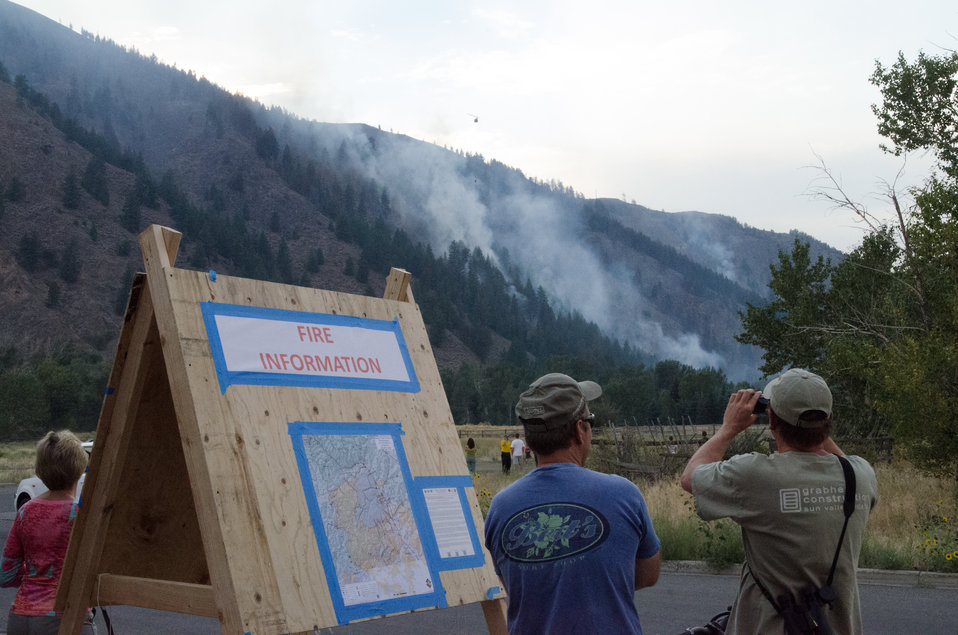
A Bell UH-1H helicopter pilot is seen from a nearby supermarket parking lot entrance and Fire Information board, as water a full load of water is released from the helibucket, below it, the collapsible bucket utilizes a pilot-controlled release valve, that is able to deliver a concentrated column of water from the helicopter to the fire on the Carbonate Ridge, rising behind the Wood River, during Beaver Creek Fire, west of Hailey, ID, on Monday, Aug 19, 2013. These operations can be performed in close proximity to the interface between wildlands and populated area, they help prevent losses due to the these types of fire.